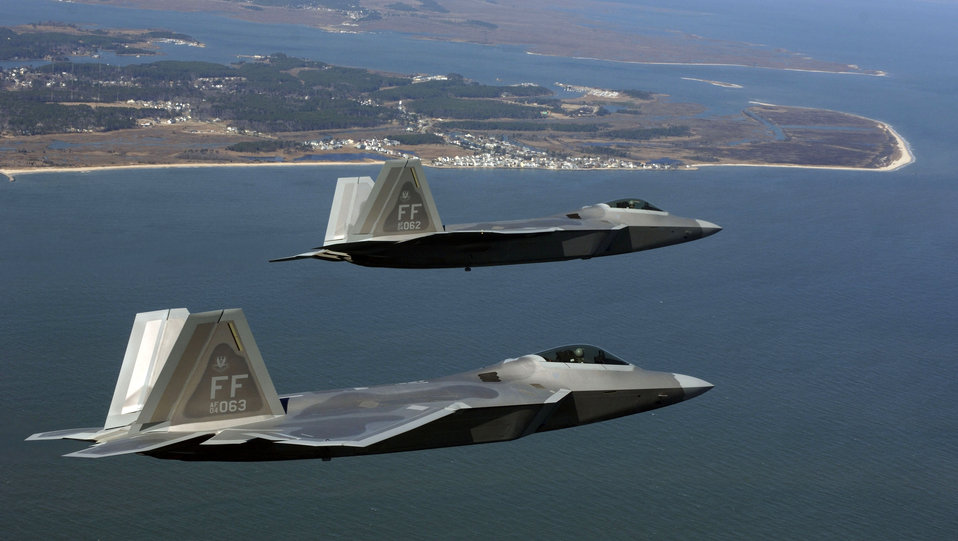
F-22 scheduled for first overseas deployment

Two F-22 Raptors move into the Langley Air Force Base pattern over Virginia. A squadron of F-22 Raptors is scheduled to deploy to Kadena Air Base, Japan, as part of U.S. Pacific Command's Theater Security Package in the Western Pacific in early 2007. This will be the first overseas deployment for the Air Force's newest fighter.